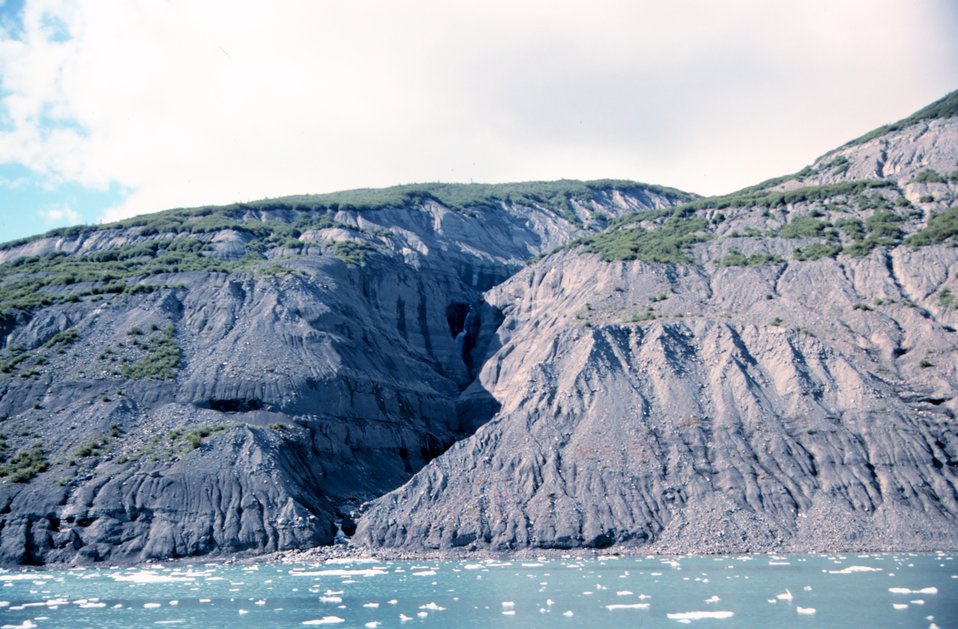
Unconsolidated glacial moraine material on the shores of Icy Bay. Not chunks of glacial ice in the water.